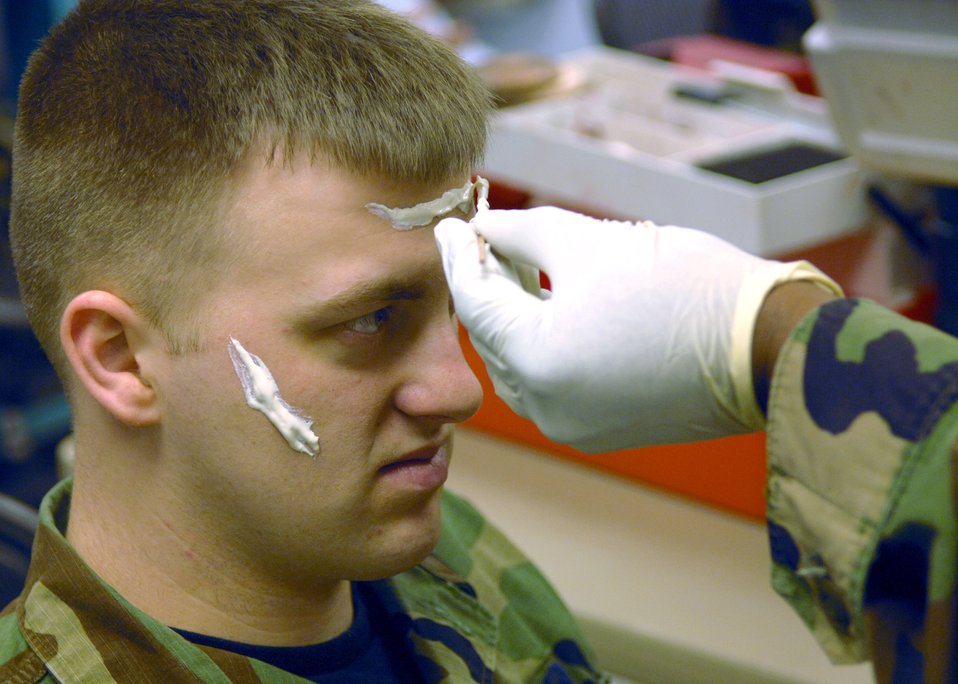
Incirlik prepares for inspection

Staff Sgt. Barry Walter transforms into a